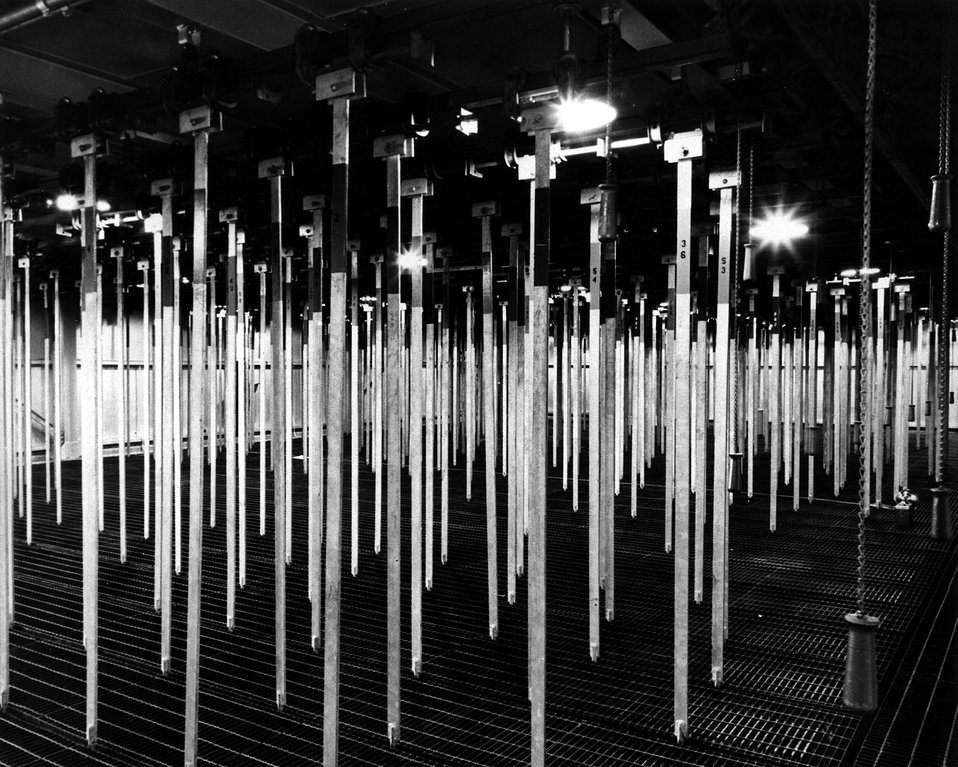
Hangers for buckets holding spent fuel assemblies in the Idaho Chemical Processing Plant fuel storage building canal. Circa 1964.